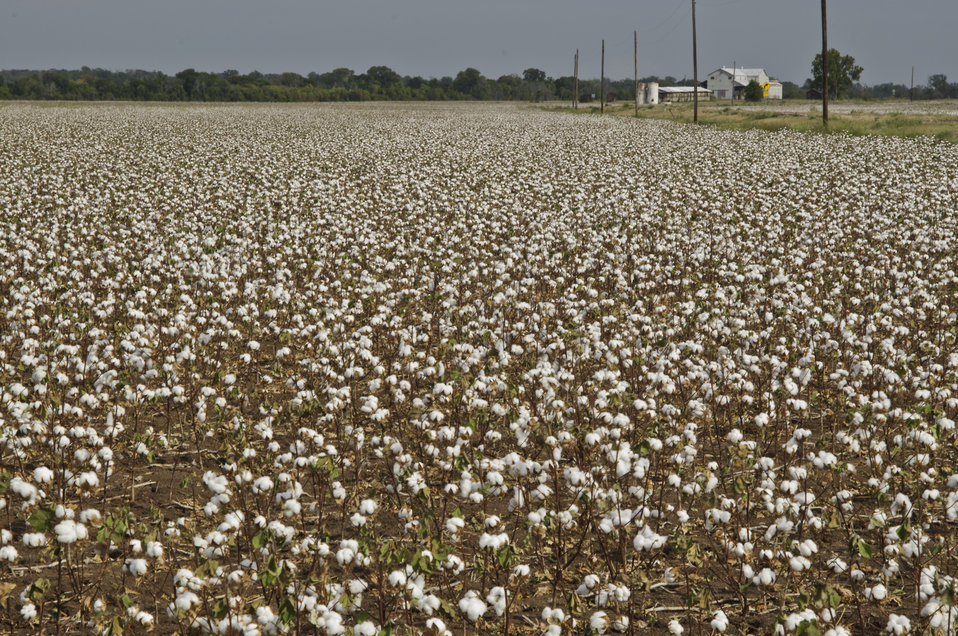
Dry Land cotton grows on a farm in Navasota, TX on Aug. 23, 2013.